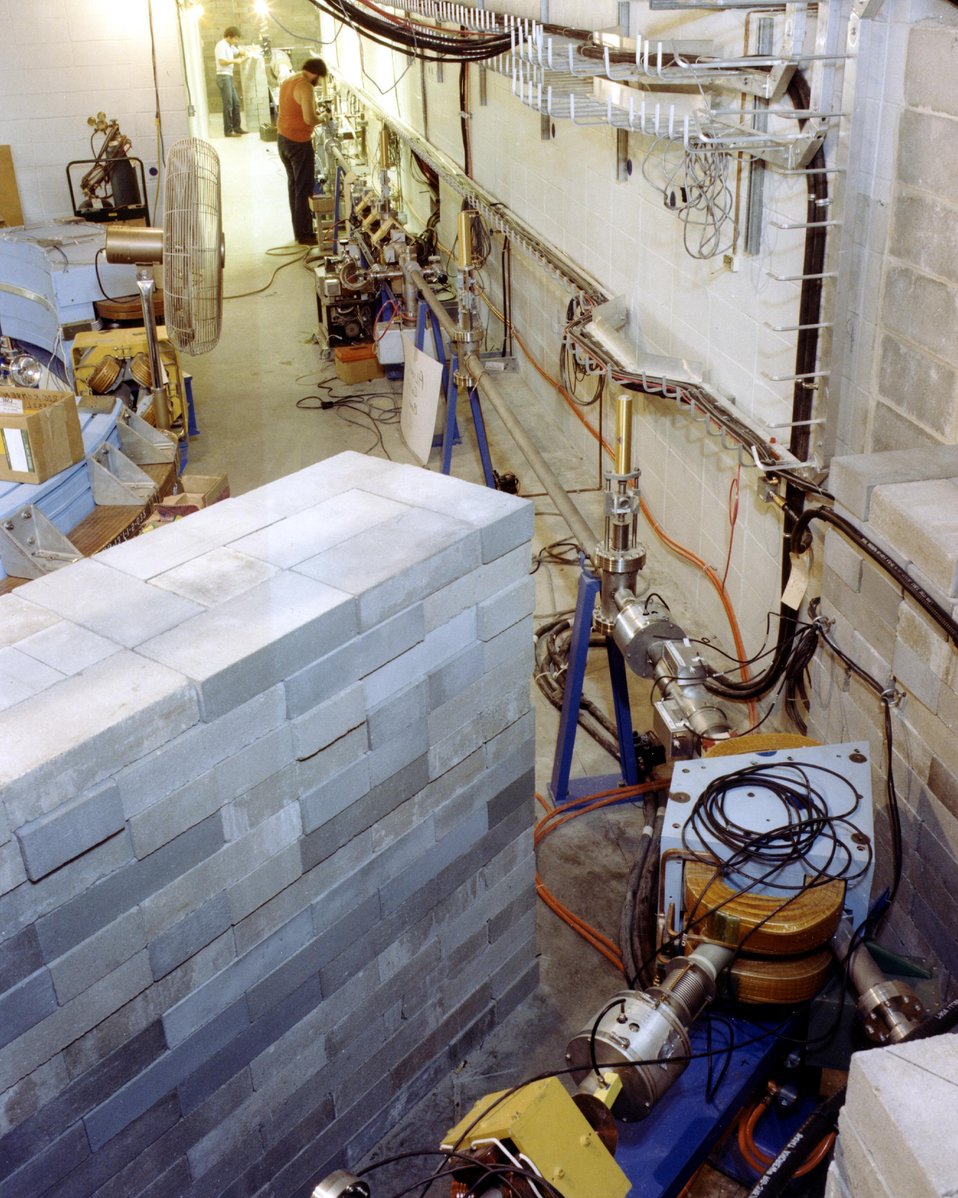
INTERIOR OF THE NSLS BUILDING DURING CONSTRUCTION OF THE BEAM LINE.

THE NSLS WILL ACCELERATE AND STORE ELECTRONS AT A SPEED CLOSE TO THAT OF LIGHT TO PRODUCE AN ENTIRE SPECTRUM OF RADIATION, FROM INFRARED THROUGH X-RAYS, FOR UNIQUE APPLICATIONS IN MANY FIELDS OF SCIENCE. THE FACILITY WILL CONSIST OF TWO ELECTRON STORAGE RINGS. THE SMALLER RING WILL ACCELERATE ELECTRONS TO 700 MILLION ELECTRON VOLTS TO PRODUCE ULTRAVIOLET RADIATION, AND THE LARGER RING WILL ACCELERATE ELECTRONS TO 2500 MILLION ELECTRON VOLTS TO PRODUCE X-RAYS. THE ULTRAVIOLET LIGHT CAN BE USED TO STUDY: CHEMICAL REACTIONS AND STRUCTURES, THE PROPERTIES OF PURE METALS, ALLOYS, AND INSULATING MATERIALS, AND THE TRANSFER OF ENERGY IN BIOLOGICAL SYSTEMS. X-RAY LITHOGRAPHY MAY BE USED BY THE ELECTRICAL INDUSTRY IN THE PRODUCTION OF MICROSCOPIC PRINTED CIRCUITS FOR COMPUTERS AND MICROPROCESSORS. X-RAY MICROSCOPY COMPLEMENTS ELECTRON MICROSCOPY, PERMITTING OPERATIONS THAT WOULD BE IMPOSSIBLE WITH AN ELECTRON MICROSCOPE.